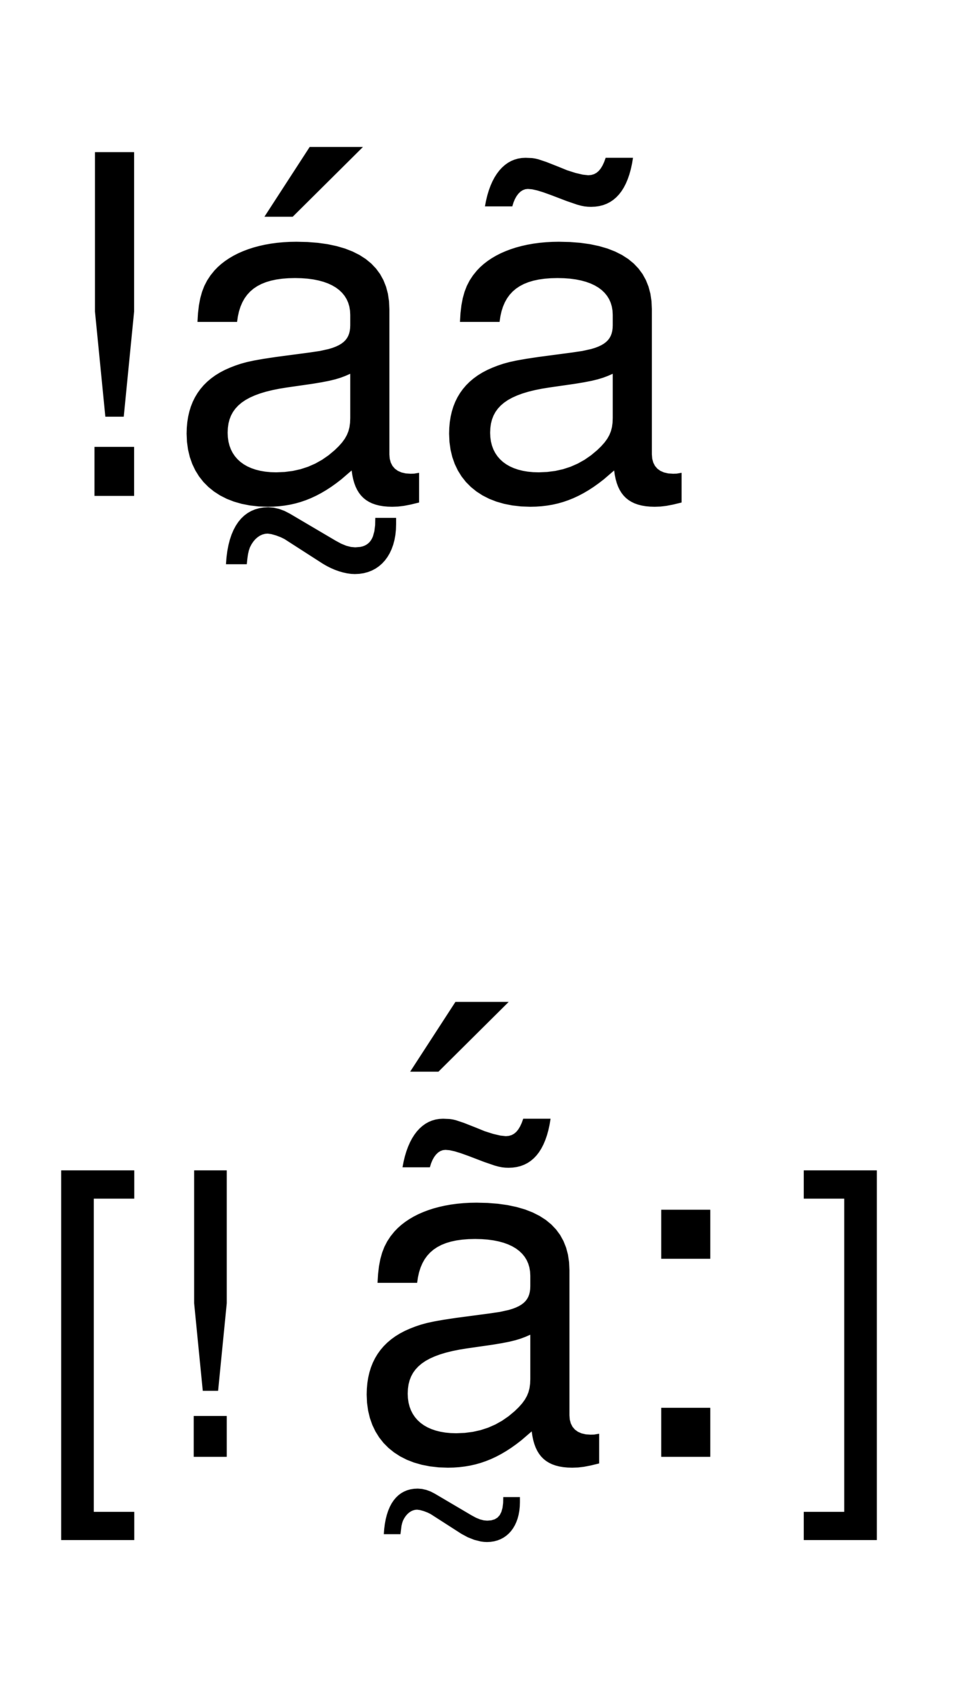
Image showing the pronunciation of the !Xóõ word !á̰ã.